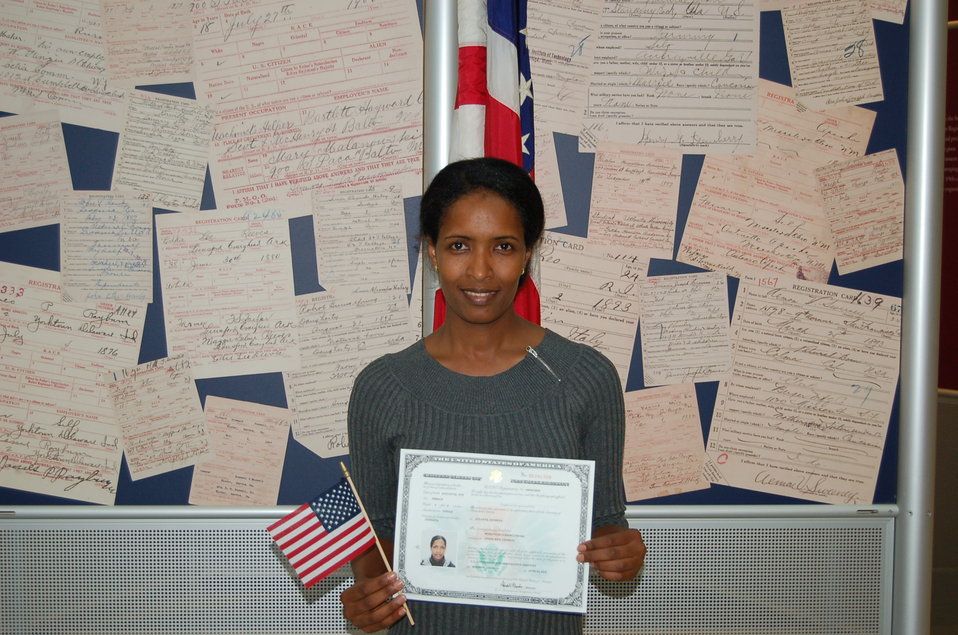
New Citizens